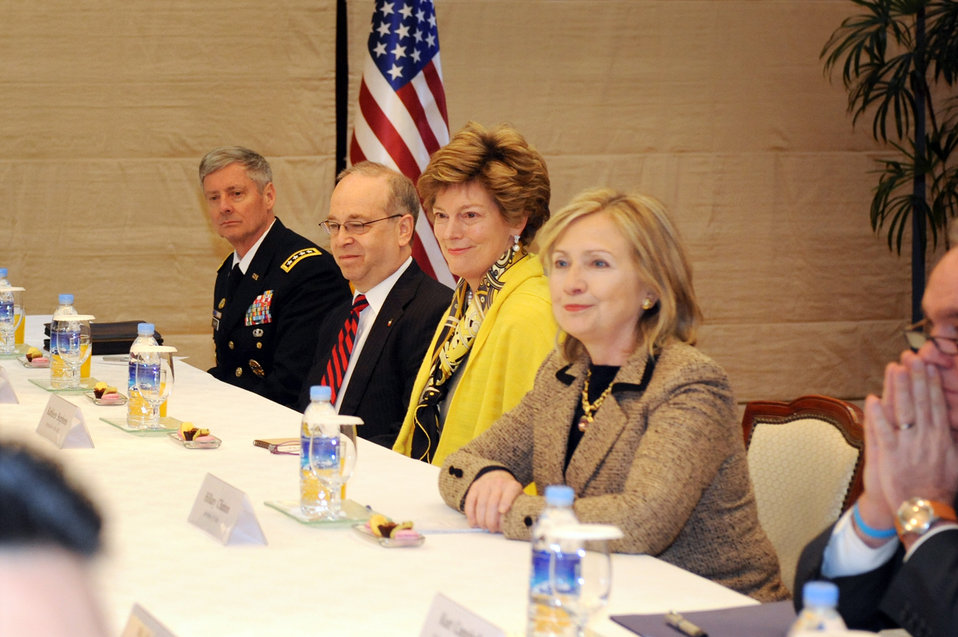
Secretary Clinton, Ambassador Stephens and Others Listen to Republic of Korea Foreign Minister Kim Sung-hwan

U.S. Secretary of State Hillary Rodham Clinton, U.S. Ambassador to Korea Kathleen Stephens, and others listen to remarks by Republic of Korea Foreign Minister Kim Sung-hwan at his residence in Seoul, South Korea, on April 16, 2011.